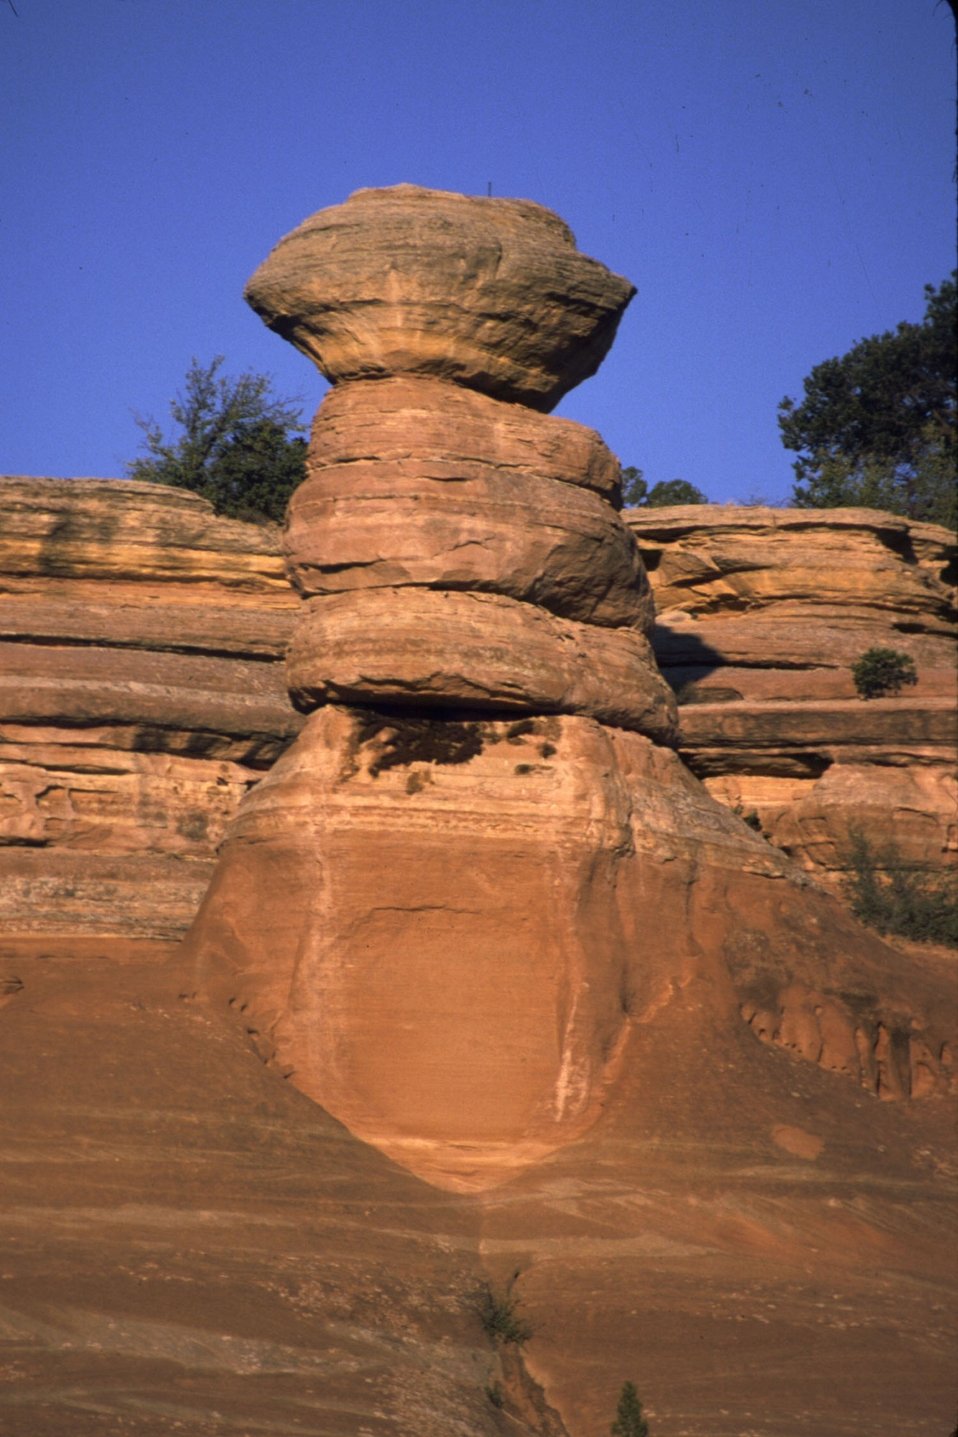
Devil's Canyon